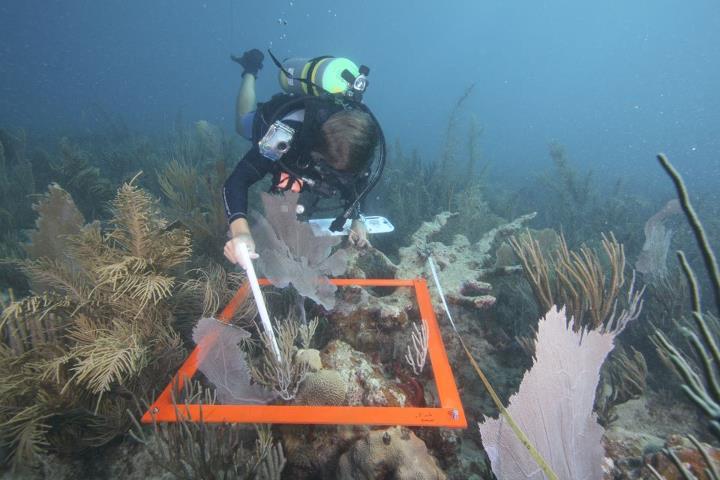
Coral reef survey off coast of Puerto Rico

EPA diver Bob Quarels conducts a coral reef survey to assess overall health off the southern coast of Puerto Rico.

EPA studies coral reefs because they are great indicators of water quality and the overall health of coastal watersheds.

Learn more @ www.epa.gov/bioindicators/coral/index.html

EPA Region 2 more locally serves New Jersey, New York, Puerto Rico, the U.S. Virgin Islands and eight tribal nations.